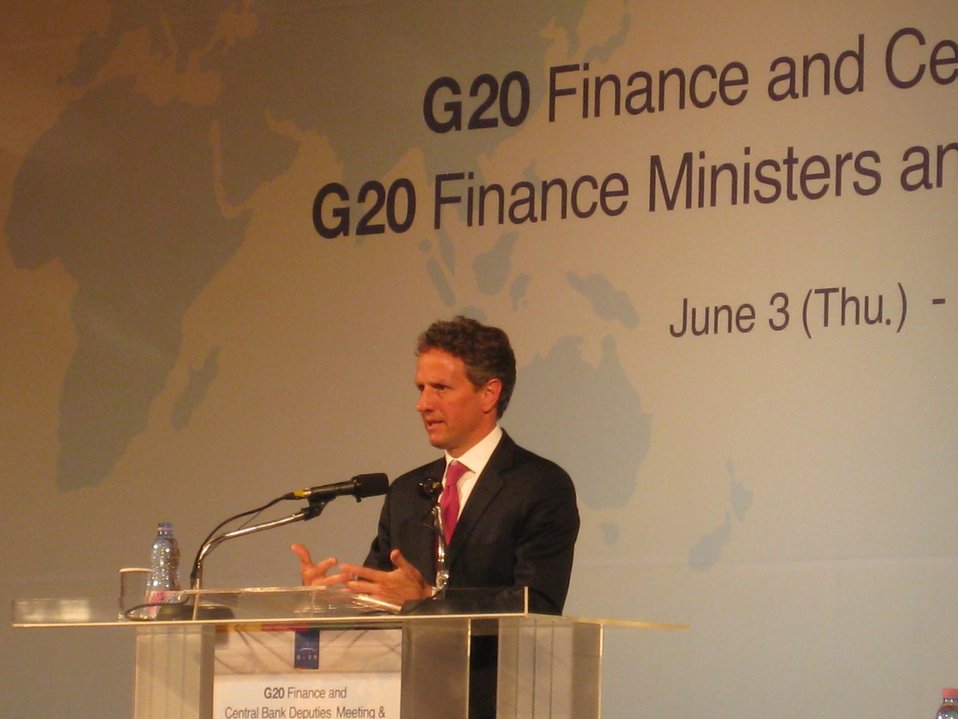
G-20 6/5/10

Secretary Geithner spoke at a press confrence at the conclusion of the G-20 Meeting of Finance Ministers and Central Bank Governors in Busan, Korea.